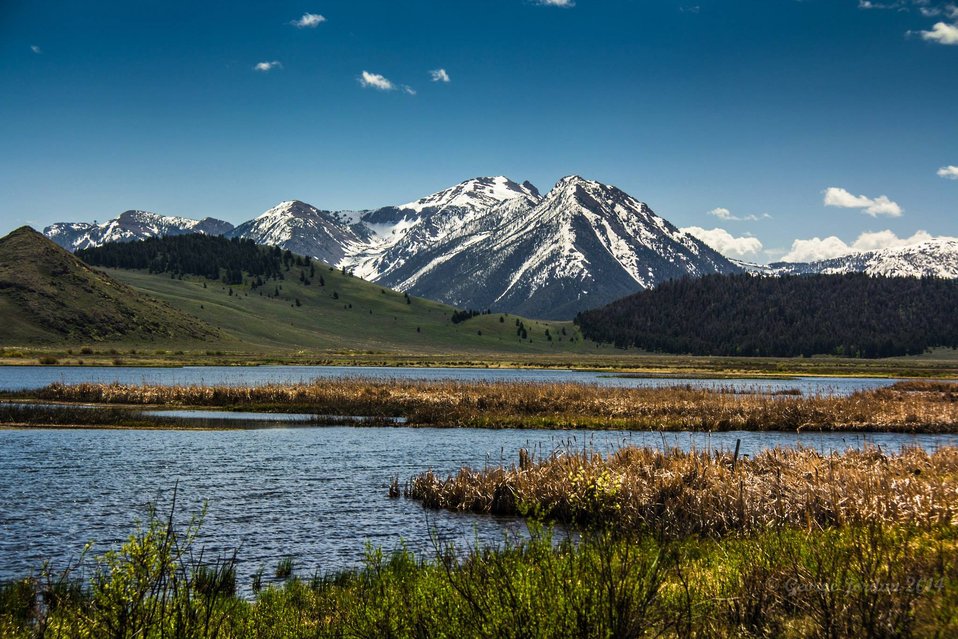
Widgeon Pond, Red Rock Lakes NWR

Red Rock Lakes National Wildlife Refuge is located in Montana's Centennial Valley and is part of the Greater Yellowstone ecosystem.

Originally established in 1935 to protect trumpeter swans, this refuge is home to a variety of other wildlife, as well as Arctic Grayling, a very unique member of the trout family.

Additionally, the views from this refuge are among some of the finest to be found.